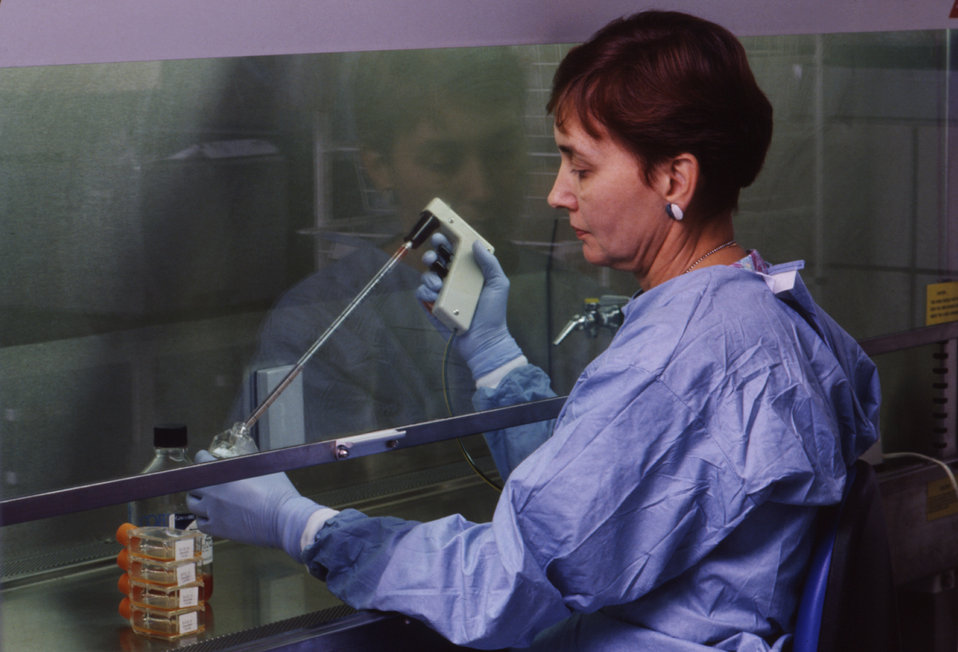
To protect from biohazardous materials, laboratorians often work within a ventilated system and wear protective clothing.